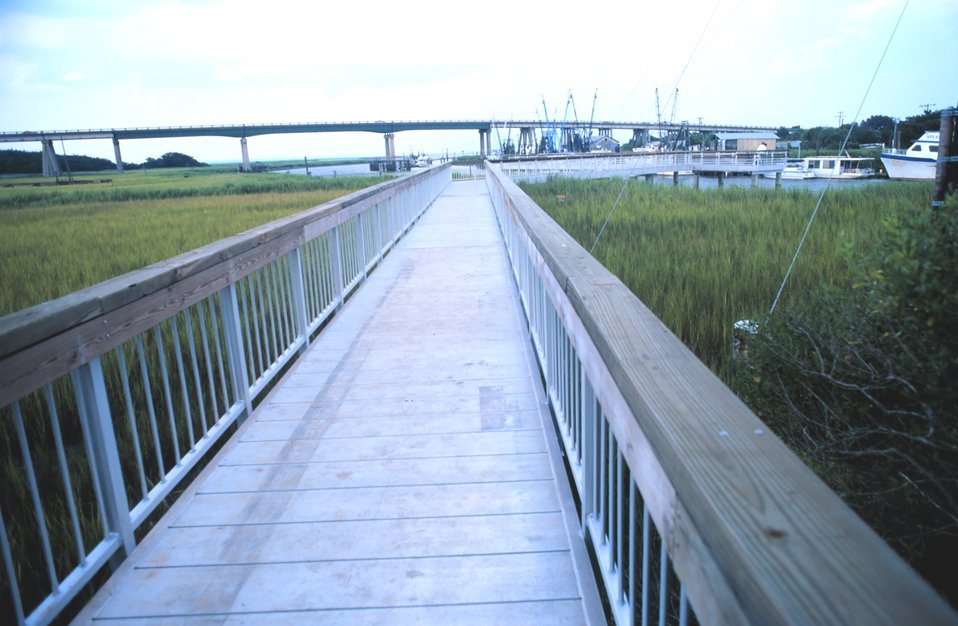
A view over the wetlands to the Lazaretto Creek Bridge